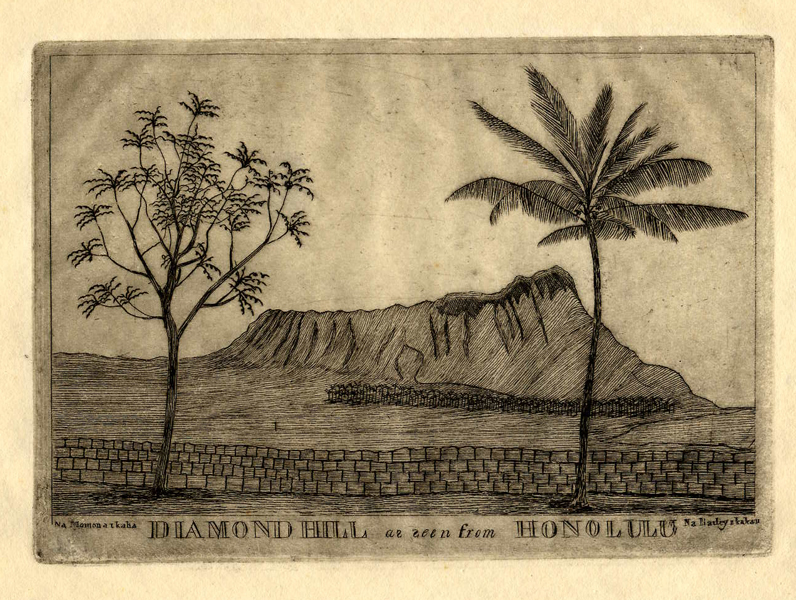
Diamond Hill as seen from Honolulu by Edward Bailey, c. 1850's, copper plate engraving, 14 1/4 x 6 inches